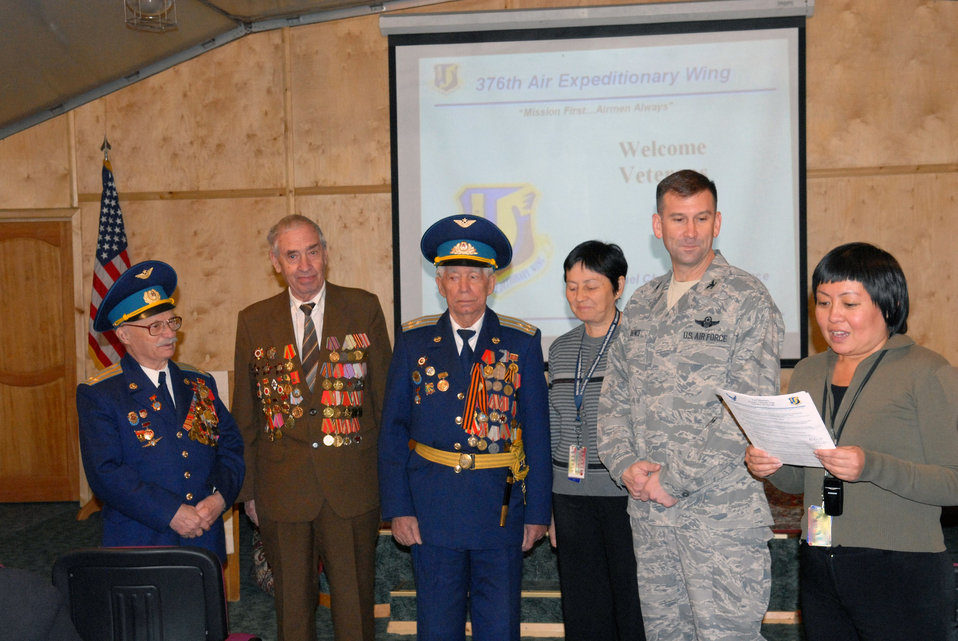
Kyrgyz war heroes, Manas Airmen enjoy Veterans Day

Aigul Karymshakova reads a poem prepared by retired Soviet air force Col. Vasili Strelnikov (center), to Manas Airmen during a Veterans Appreciation Day visit by ten Kyrgyz World War II veterans, Nov. 11. Listening from left to right are retired colonels Yuri Krupin, Nikolai Nikiforov and Strelnikov, interpreter Valentina Turabekova, and Col. Christopher Bence, 376th Air Expeditionary Wing commander. Ms. Karymshakova is an Manas AB media outreach specialist.